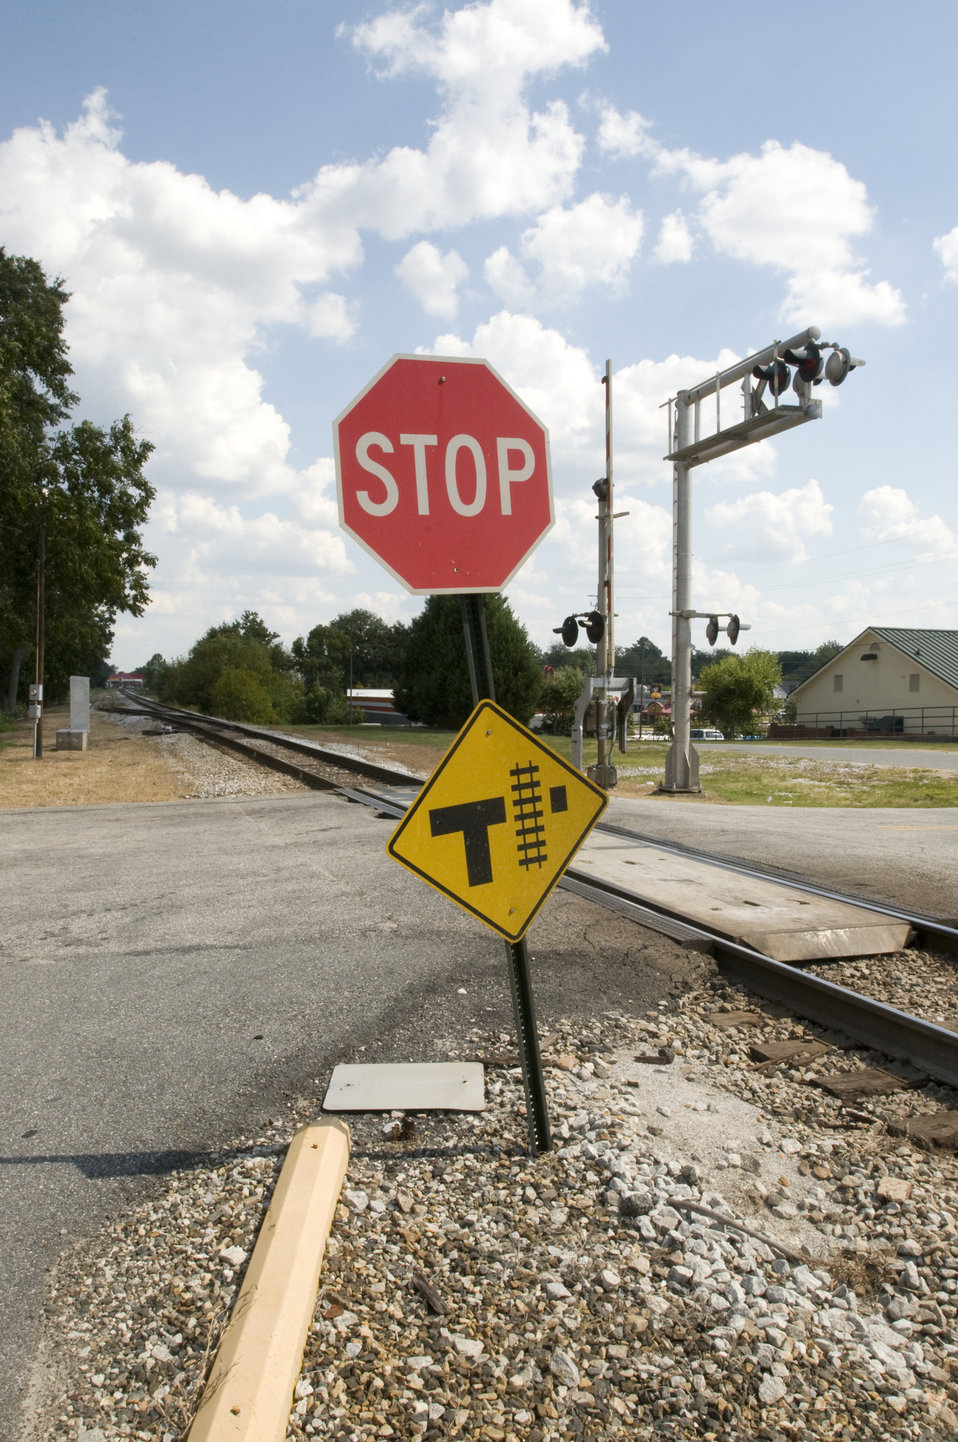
Railroad crossing traffic signs

Here we see two traffic signs indicating the intersection of a roadway and a railway, and the higher level of caution motorists, pedestrians, and bicyclists need to exercise especially at this type of intersection. The octagonally-shaped familiar red stop sign was placed at the top of the metal sign post, beneath which was a diamond-shaped cautionary yellow railway sign. The railway can be seen at the right running off into the distance, as well as its accompanying gate and overhead flashing warning lights.